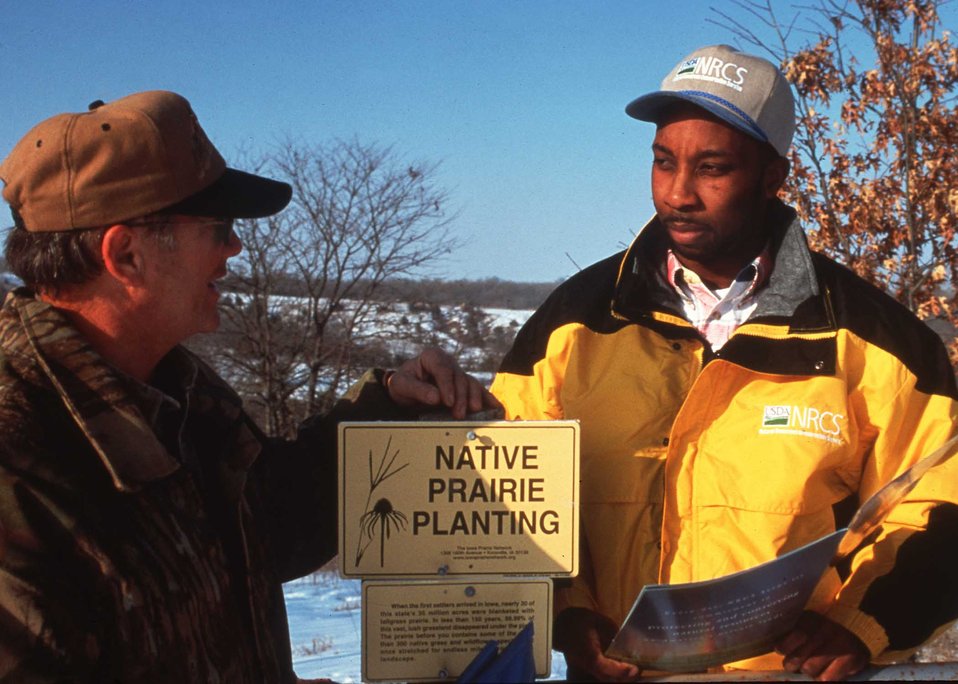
An NRCS soil conservationist discusses native grasses and other wildlife habitat with a Montgomery County, Iowa landowner interested in providing habitat on his farm.